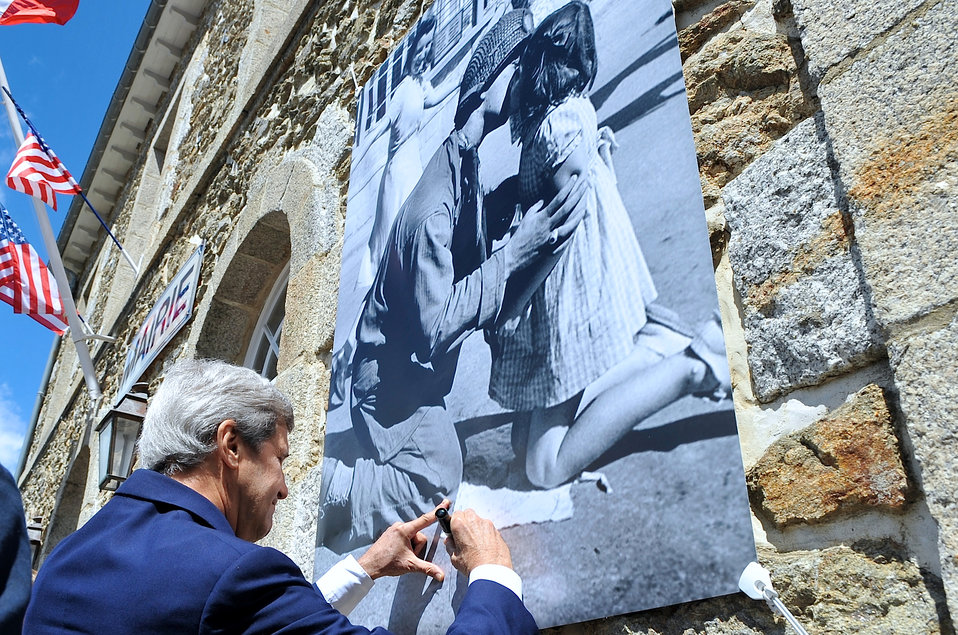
Secretary Kerry Signs Posted of Famed Vaccaro Photo in Saint Briac

U.S. Secretary of State John Kerry autographs a poster-sized copy of photographer Tony Vaccaro's famed photo of the liberation of Saint Briac, France, during a ceremony in the community saluting the durability of the U.S.-French alliance on June 7, 2014.